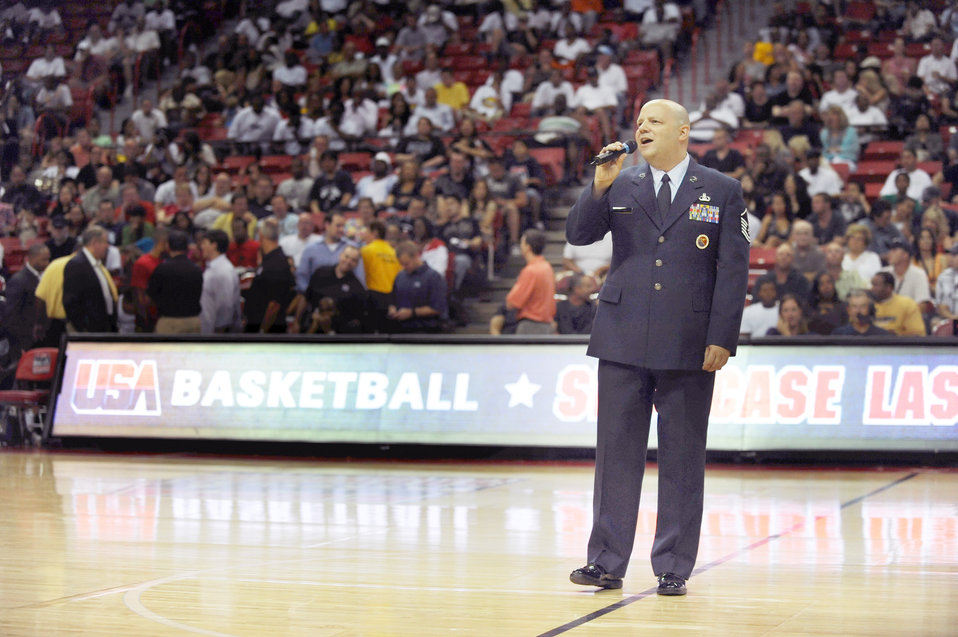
Nellis Airmen honored at USA Basketball exhibition

Master Sgt. Robert Brooks performs